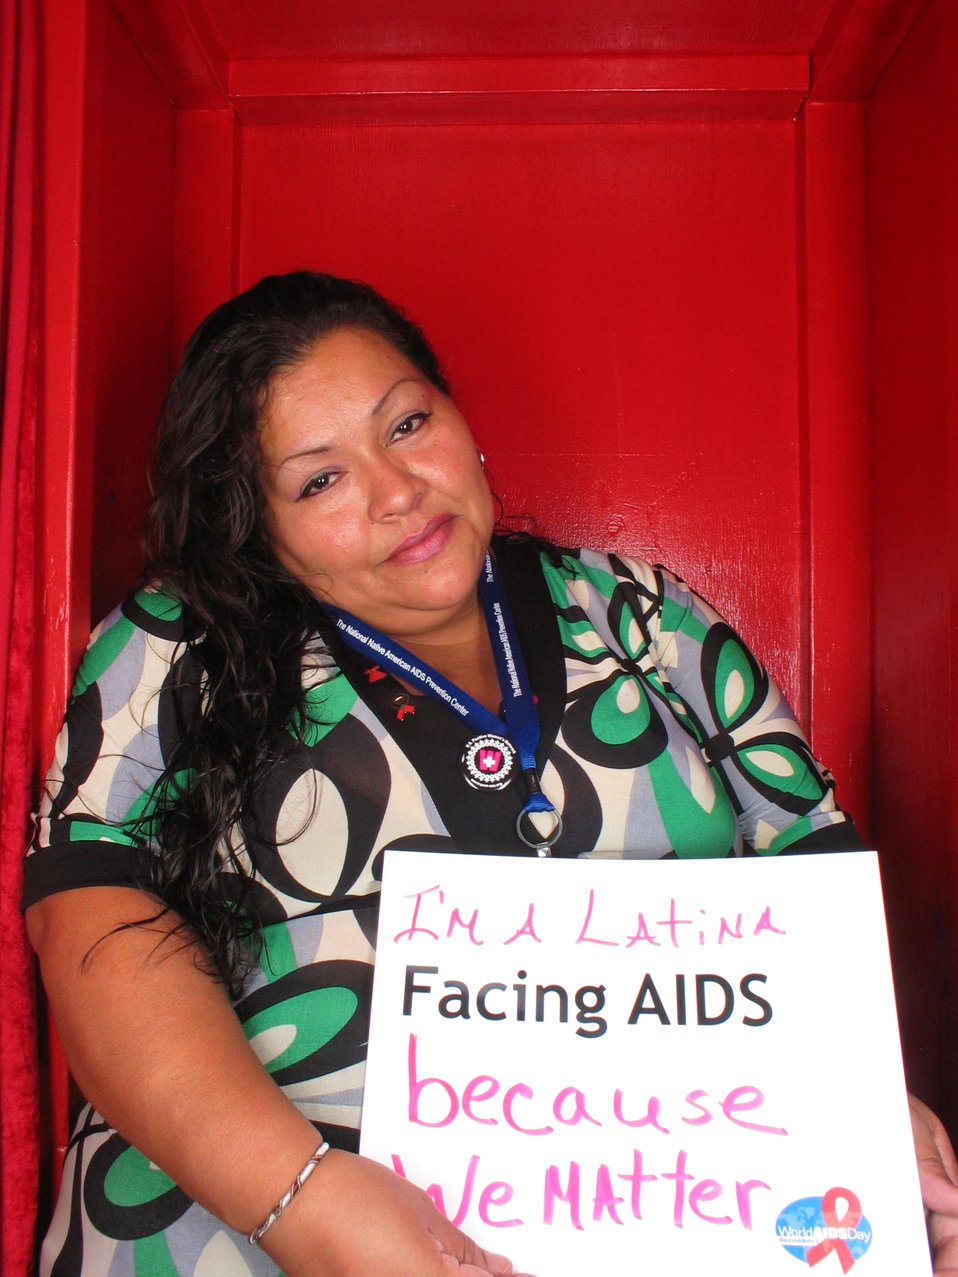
I'm a Latino Facing AIDS because we matter.